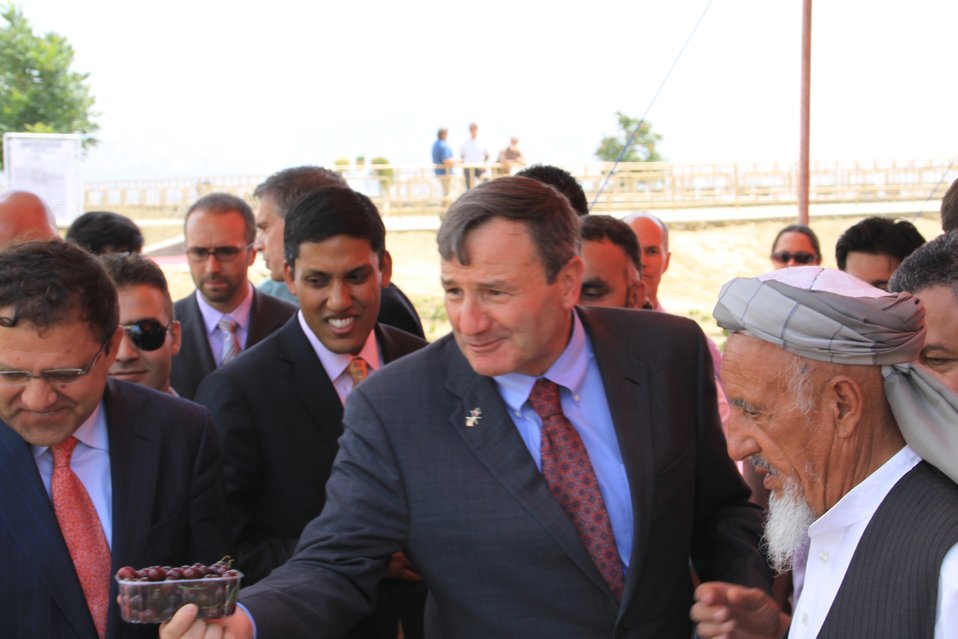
Badam Bagh Farm